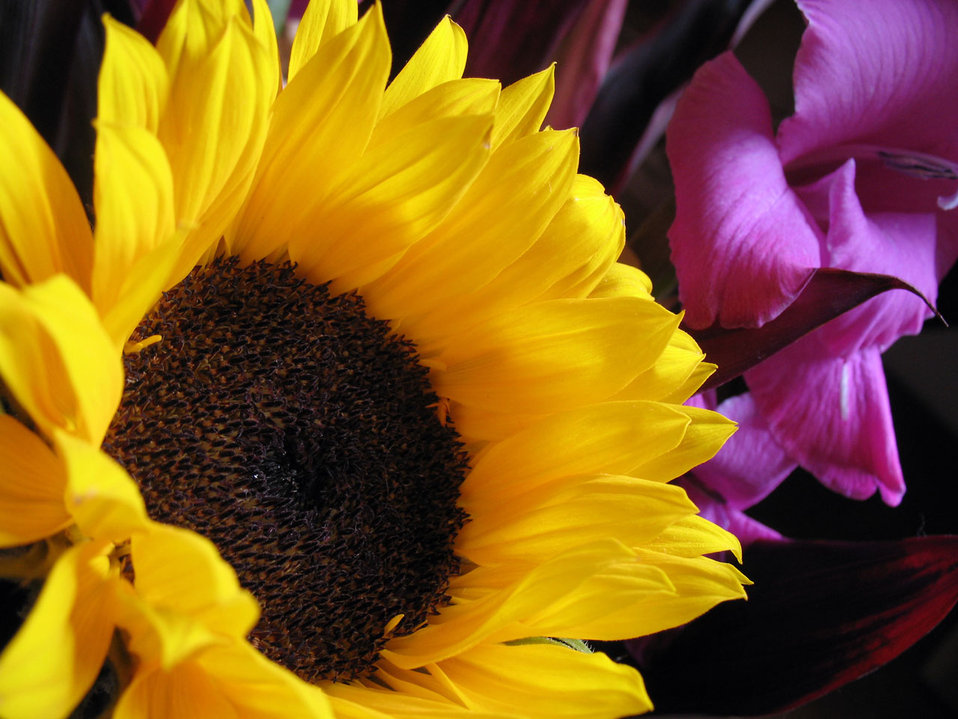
Sunflower and gladiolus.